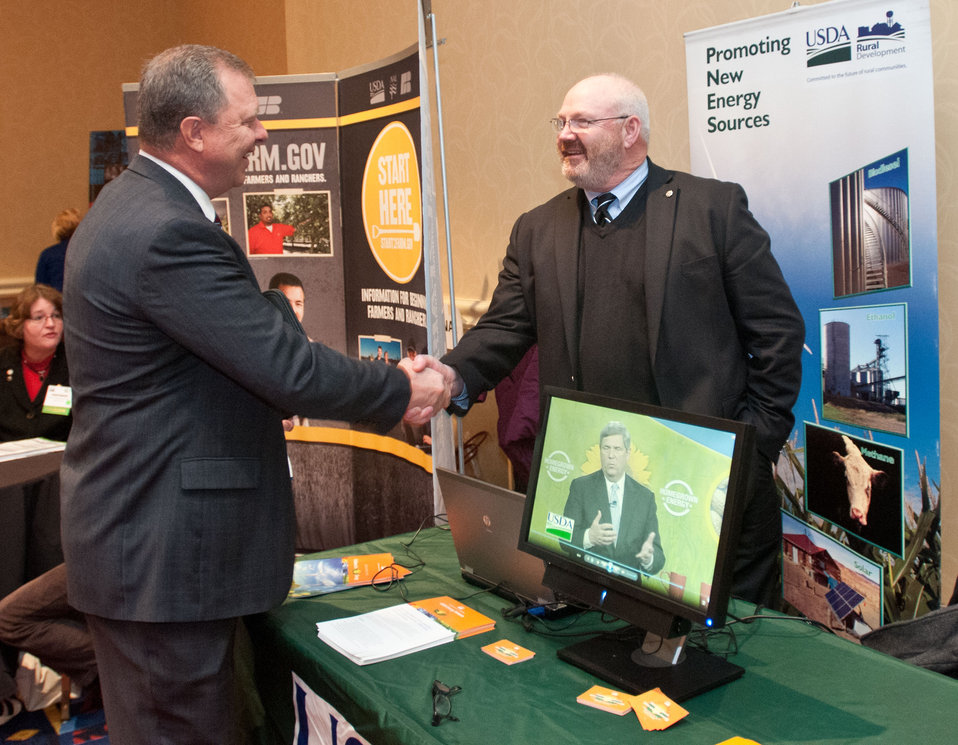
U.S. Department of Agriculture (USDA) Rural Development Renewable Energy Policy Specialist Anthony Cooks, Ph.D., right, talks with Northern Arizona University Ecological Restoration Institute's Bruce Greco, left, during the 2013 Agricultural Outlook Forum, at the Crystal Gateway Marriott Hotel, Arlington, Virginia on Thursday, Feb. 21, 2013. Mr. Greco was one of the speakers at this annual Forum that brings together producers, policymakers, and business, government, and industry leaders to meet, exchange ideas, and discuss timely agriculture issues.